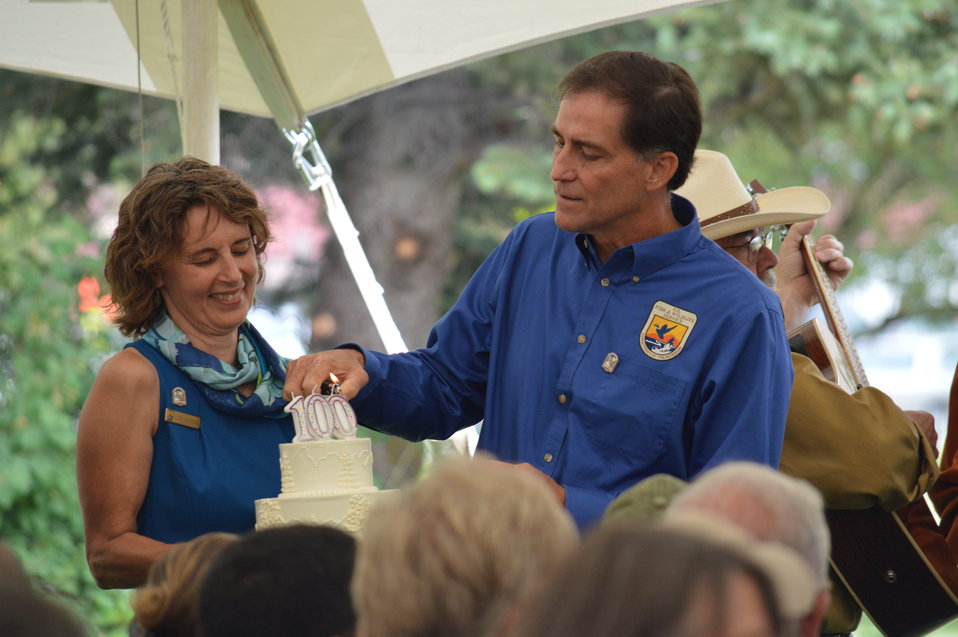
Lighting the Candles

USFWS Director Dan Ashe lit the candles on a birthday cake that was carried in at the end of the National Elk Refuge's centennial ceremony. Shortly after, the audience sang the Happy Birthday Song.